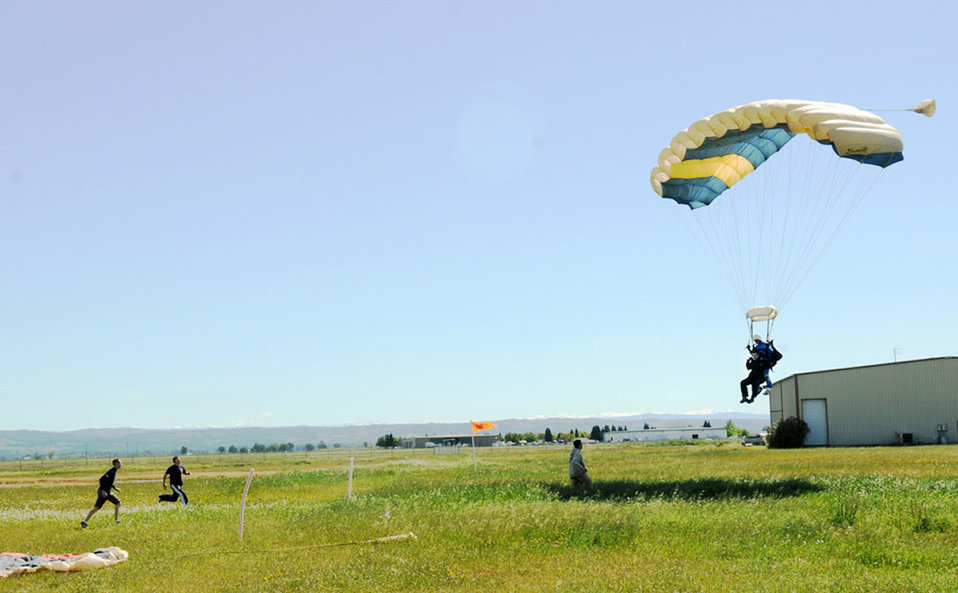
Airmen 'Jump into Prevention'

An Airman glides to the ground as sky diving instructors run to catch the parachute and assist in the landing, April 30, 2010 at Lincoln Regional Airport. Airmen were sky diving to promote sexual assault awareness during Sexual Assault Awareness Month.